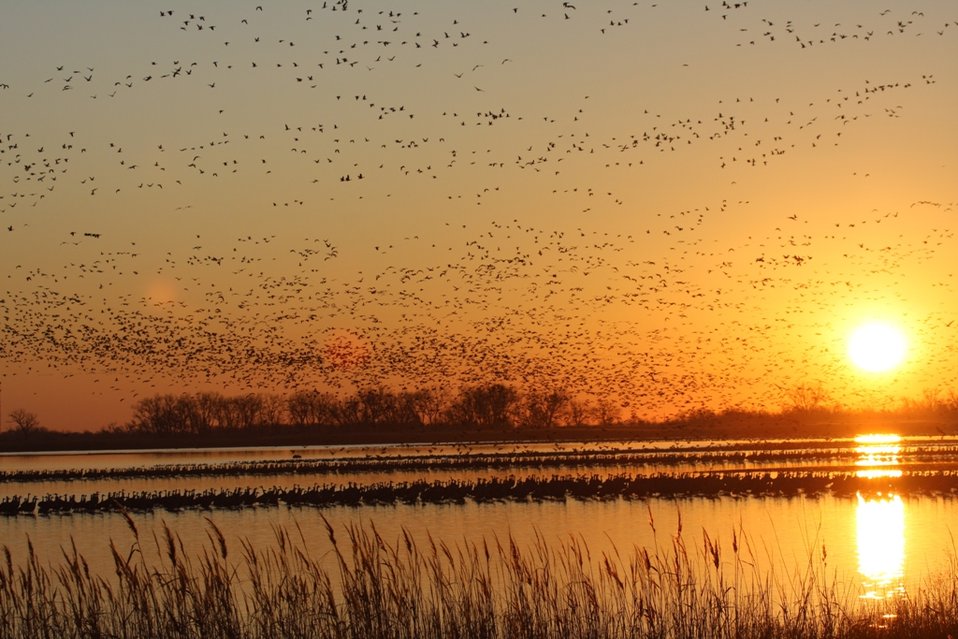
Waterfowl at Quivira National Wildlife Refuge